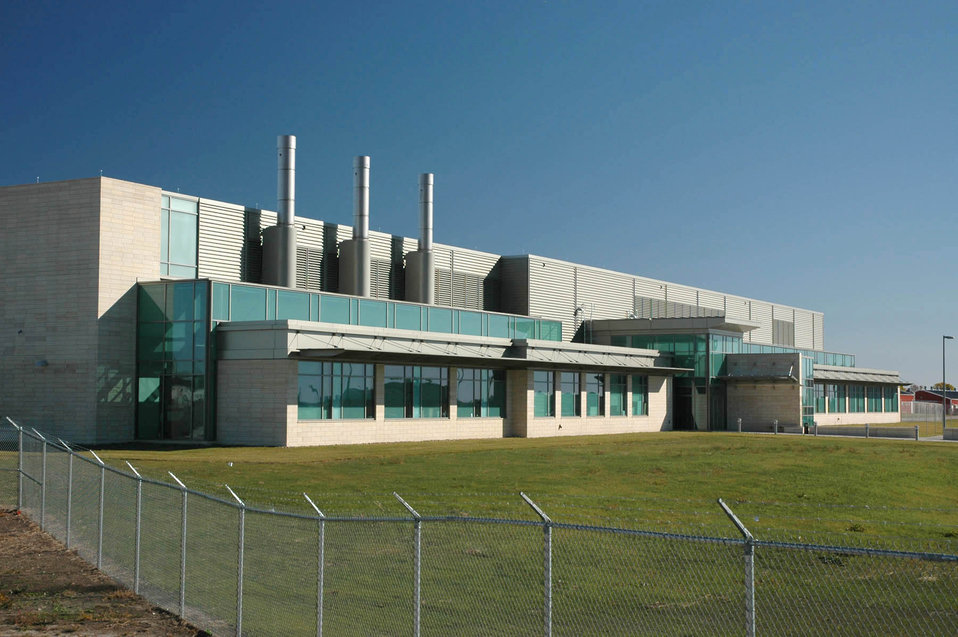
This is an image of the U.S. Department of Agriculture (USDA) research facility in Ames, IA.